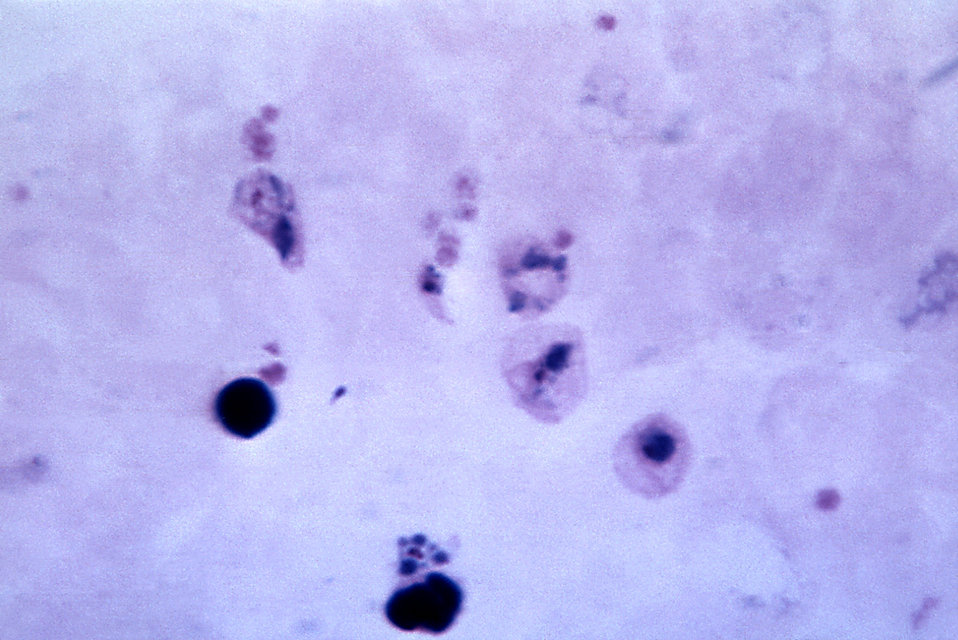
This thick film micrograph depicts mature, and growing Plasmodium vivax trophozoites; Mag. 1125X.